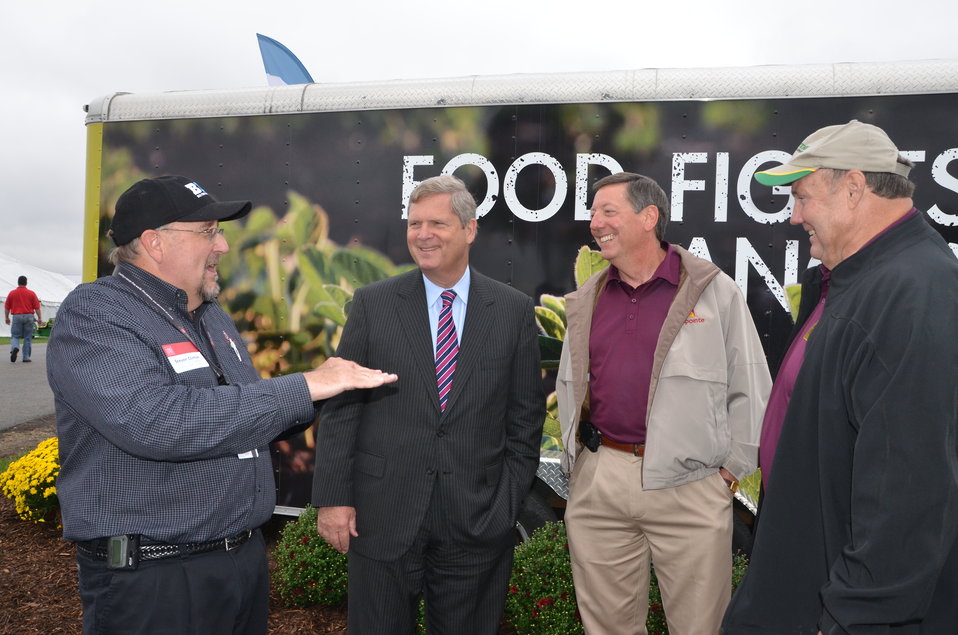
(L to R) Steven Clinton, professor Internal Medicine at The Ohio State University, Agriculture Secretary Thomas Vilsack, Gordon Wallace of Trupointe Cooperative and Eric Parthemore of Heritage Cooperative vist at the Food Fights Cancer exhibit at the Farm Science Review in Ohio on Tuesday, September 18, 2012.